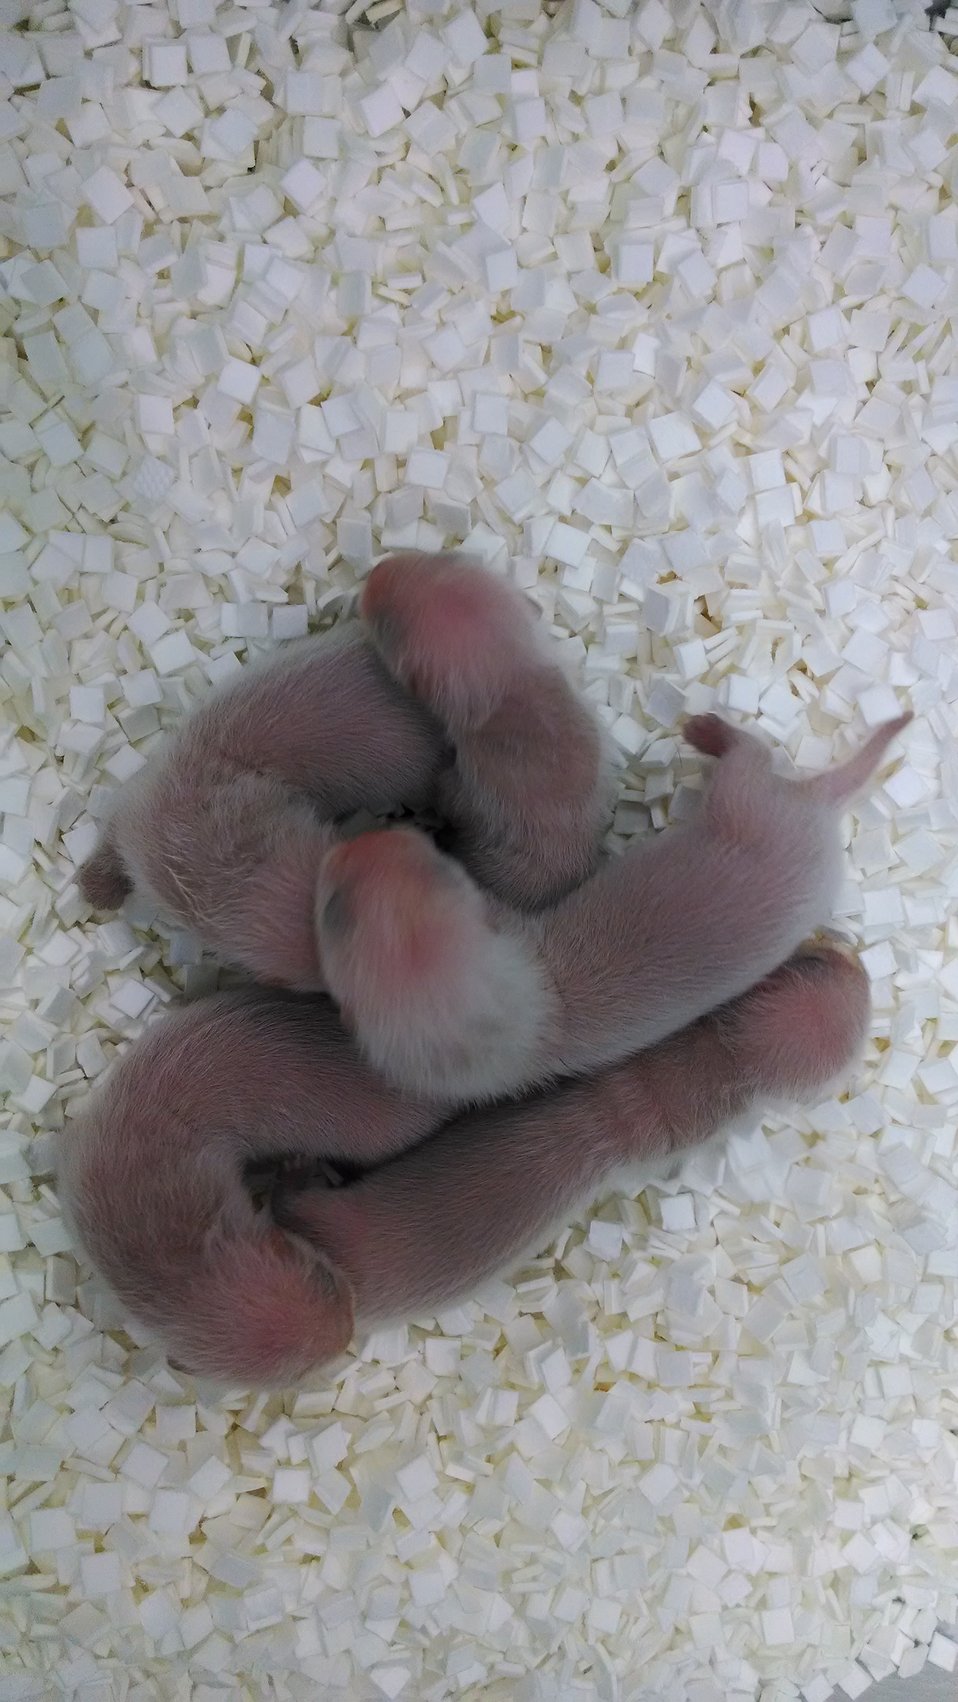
Newborn Black-footed Ferrets

These kits were just one-week-old at the time of this photo (Mid-May, 2014).